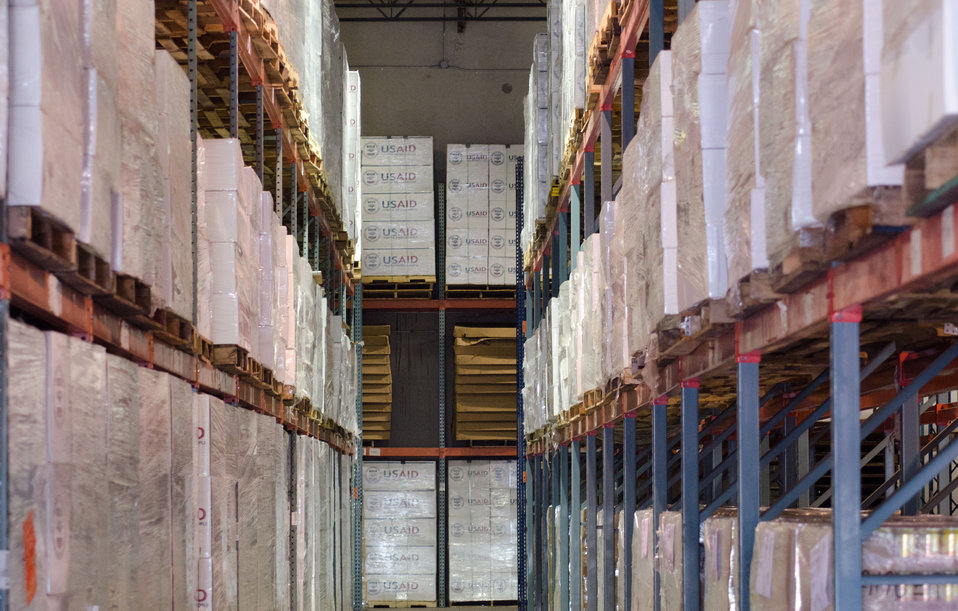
Crowley Logistics in Miami, FL on Friday, August 26, 2011 is one of three U.S. Agency for International Development (USAID) shipping and logistics facilities in the nation. In times of emergency humanitarian relief aid, they can respond with supplies delivered to aircraft at Miami International Airport within two hours. They utilize articulating forklifts, which hinge in the middle to store and retrieve pallets of supplies through narrow aisle ways. This allows for a higher density of stored supplies in the warehouse. Pallets of supplies are stacked three levels high. USAID provides humanitarian assistance through the Office of U.S. Foreign Disaster Assistance (OFDA). OFDA is the lead U.S. Government (USG) office charged with providing and coordinating USG humanitarian assistance in response to international emergencies and disasters. To achieve this, USAID works in cooperation with other USG offices such as the U.S. Department of Agriculture (USDA), and international humanitarian experts. The USDA provides food assistance to support emergency feeding programs in countries experiencing food shortages due to drought and civil conflict.